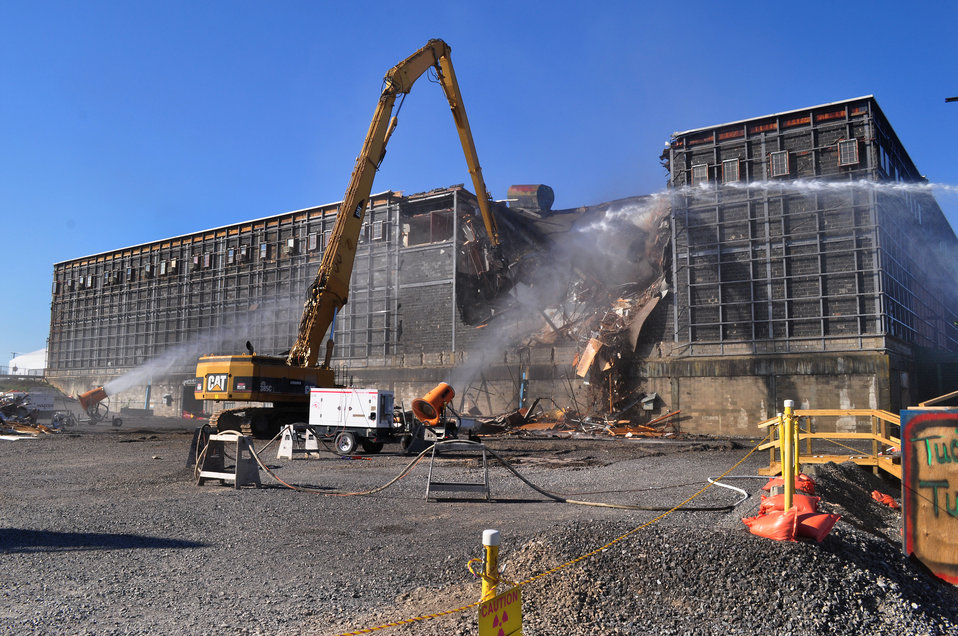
11

K-25 North Tower